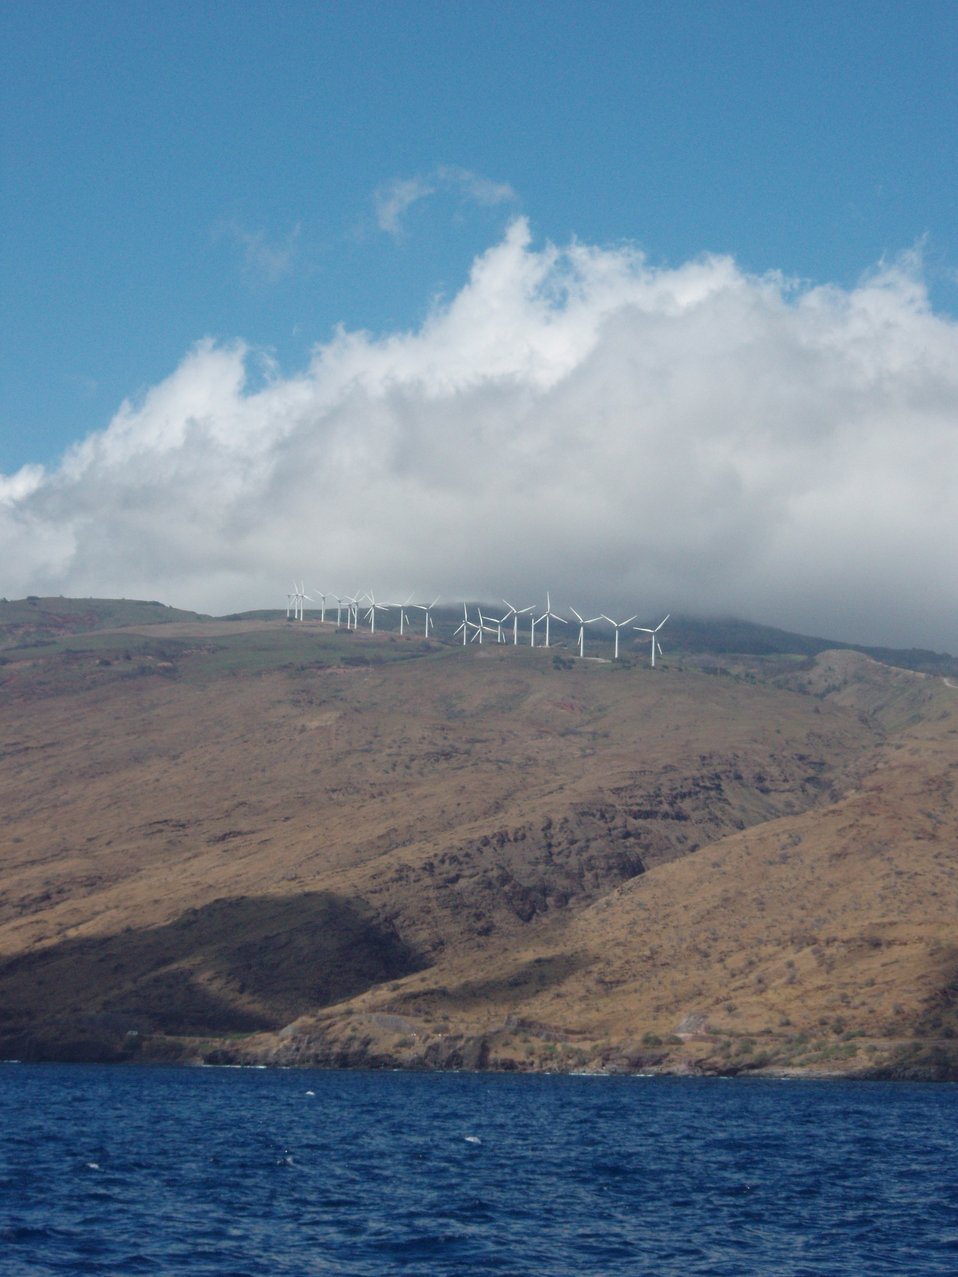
Kaheawa wind energy site on the west end of Maui. 30MW of clean renewable energy.